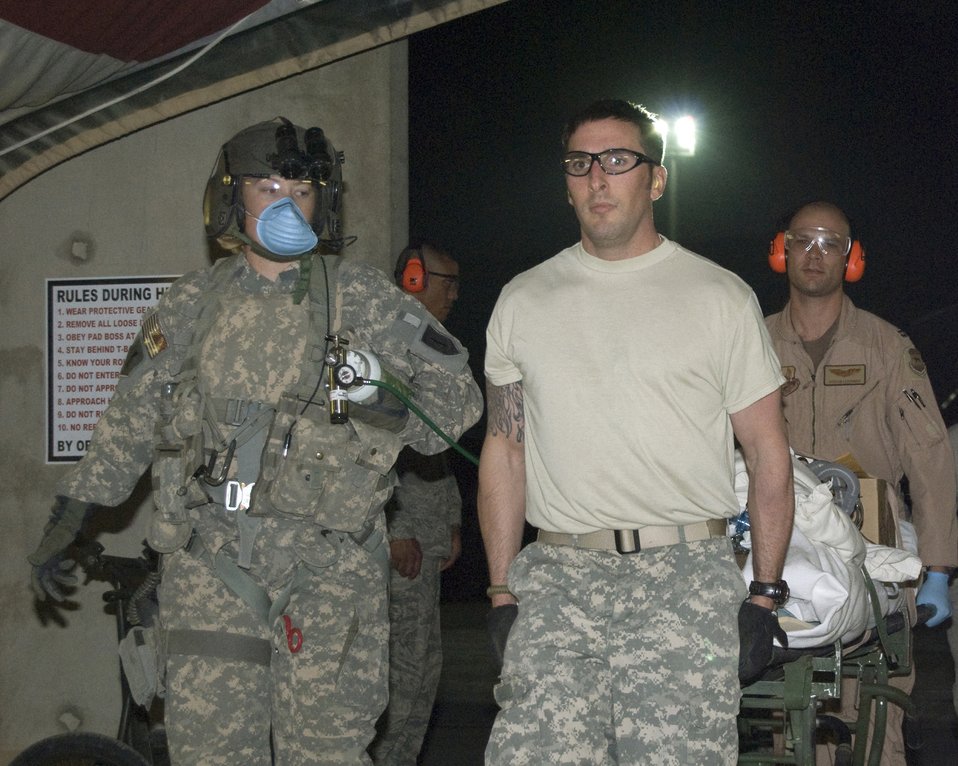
Volunteers form critical link in the 'care chain'

A UH-60 Blackhawk crewmember with the Texas National Guard's 2-149th General Support Aviation Battalion accompanies Mike Zajicek and Capt. Hunter Letchman as they wheel a patient through Hero's Highway and into the emergency room at Joint Base Balad, Iraq, Oct. 22. The patient was aeromedically evacuated to Balad via a UH-60 Blackhawk helicopter. Mr. Zajicek, a facility inspector with the 402nd Army Field Support Brigade, is deployed from the Army Research Laboratory at Aberdeen Proving Ground, Md., and has approximately 300 volunteer hours. Capt. Letchman, the 332nd Air Expeditionary Wing deputy chief of flight safety, is deployed from Columbus Air Force Base, Miss., and has approximately 20 volunteer hours.